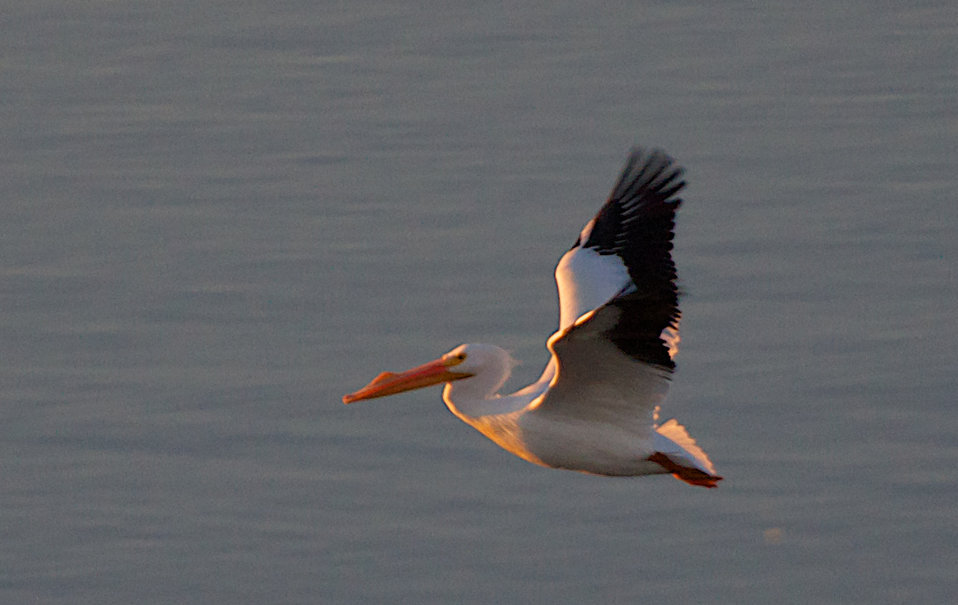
Adult American white pelican at Sonny Bono NWR